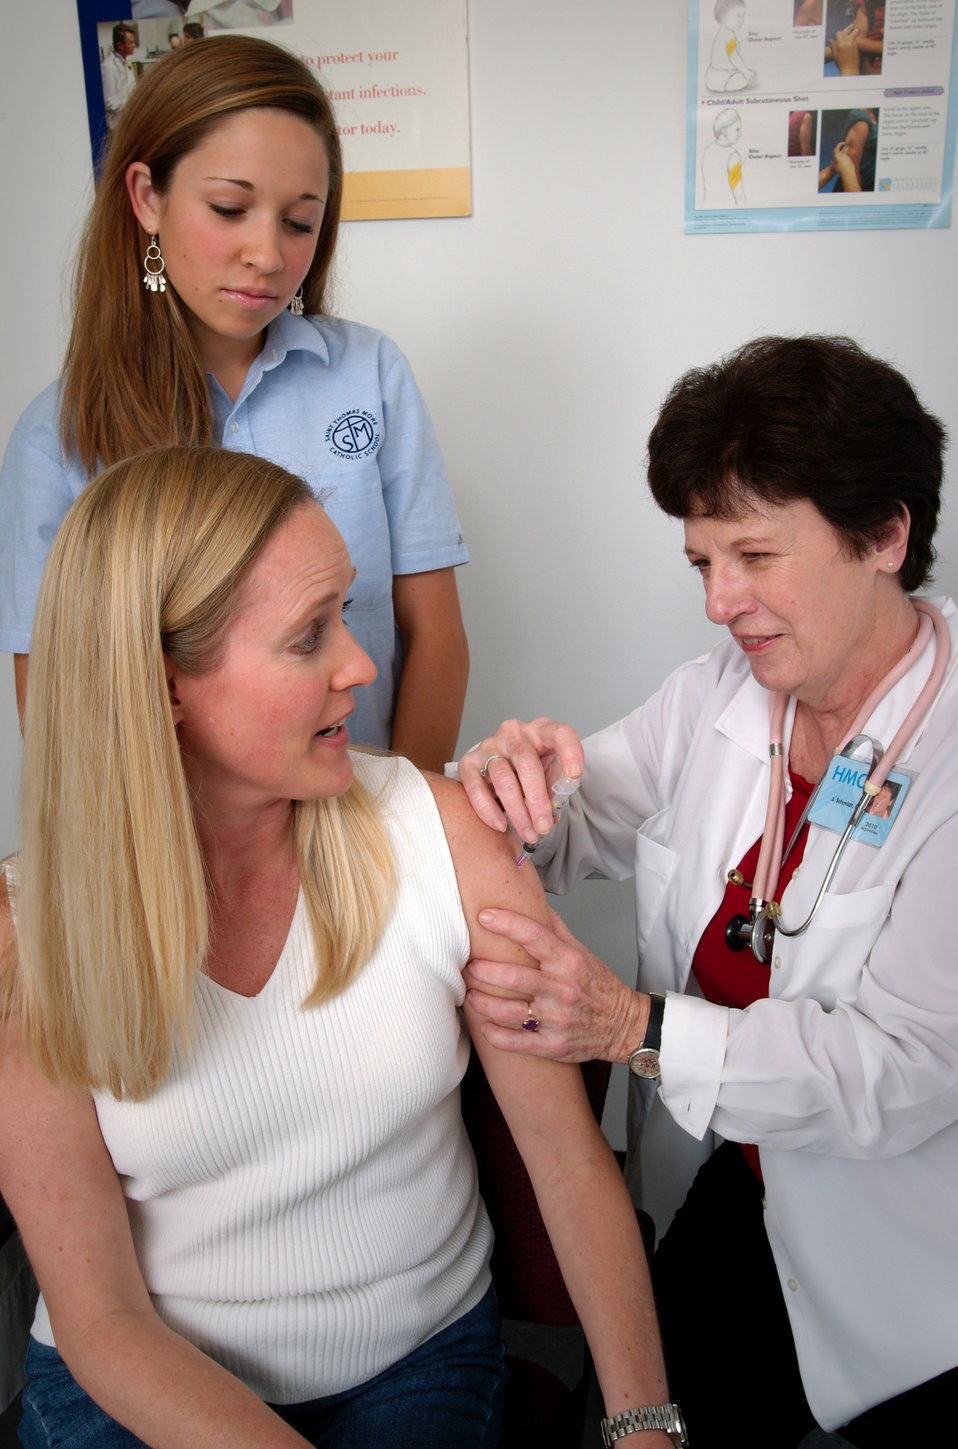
Nurse administering a vaccination

In this 2006 photograph, a nurse was in the process of administering an intramuscular vaccination into the left shoulder muscle of an adult woman, while with her free hand, she was stabilizing the injection site. The woman's daughter was shown observing the procedure from behind.